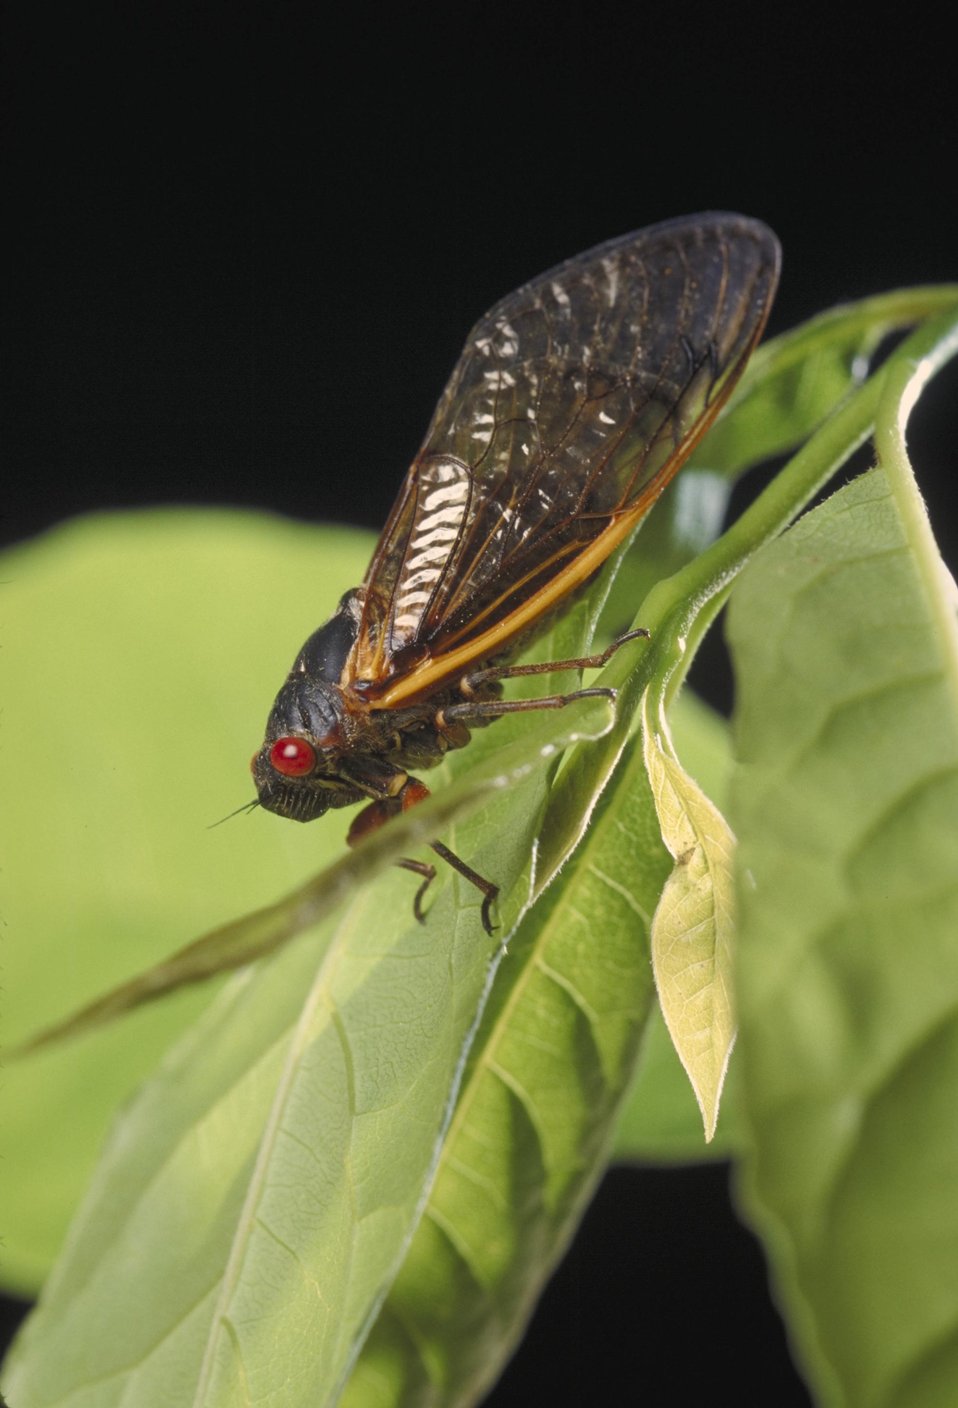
In the early spring of 2013 the eastern half of the U.S. will see and hear the emergence of the 17-year Cicada (Magicicada). The 17-year Cicada is a large insect with a black body, red eyes, and delicate wings about an inch and a half long. The Cicada will emerge from the ground as nymphs, climb onto trees and shed their skins. The males will then sing loudly to attract female mates. Once mated the females lay approximately 400 to 600 eggs in tree branches before they die. The nymphs hatch and burrow into the ground and live underground for the next 16 years sucking sap out of tree roots. The cicada’s above ground cycle lasts about a month before they die. Cicada’s have no sting or bite and are harmless to humans and pets, however the constant singing is annoying.